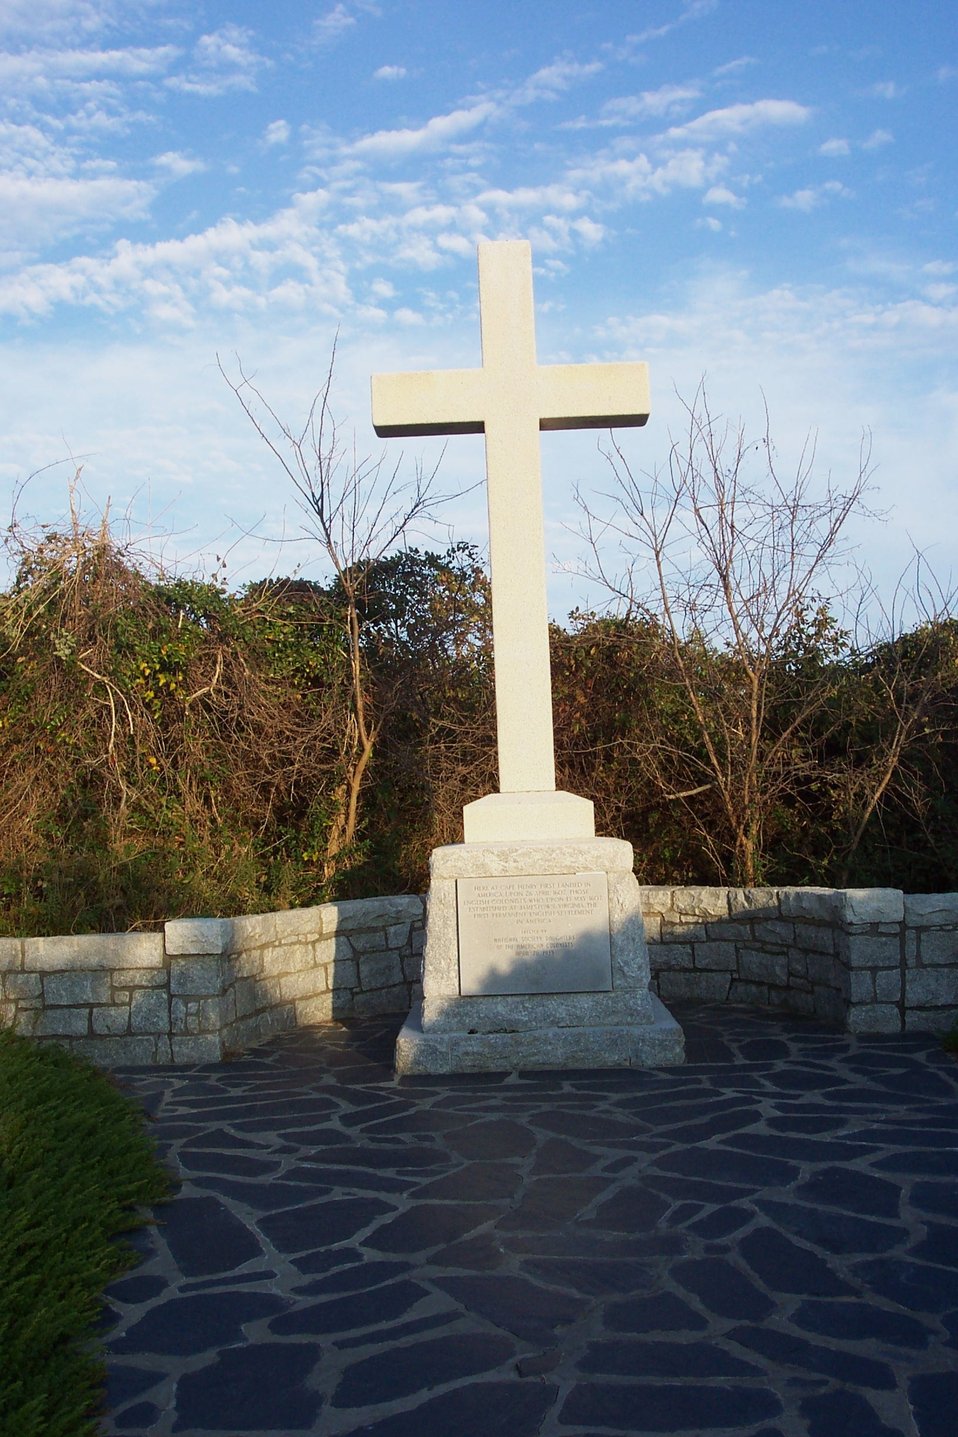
Memorial to the landing of the first English colonists, April 26, 1607, at Cape Henry. These colonists went on to found Jamestown, Virginia.